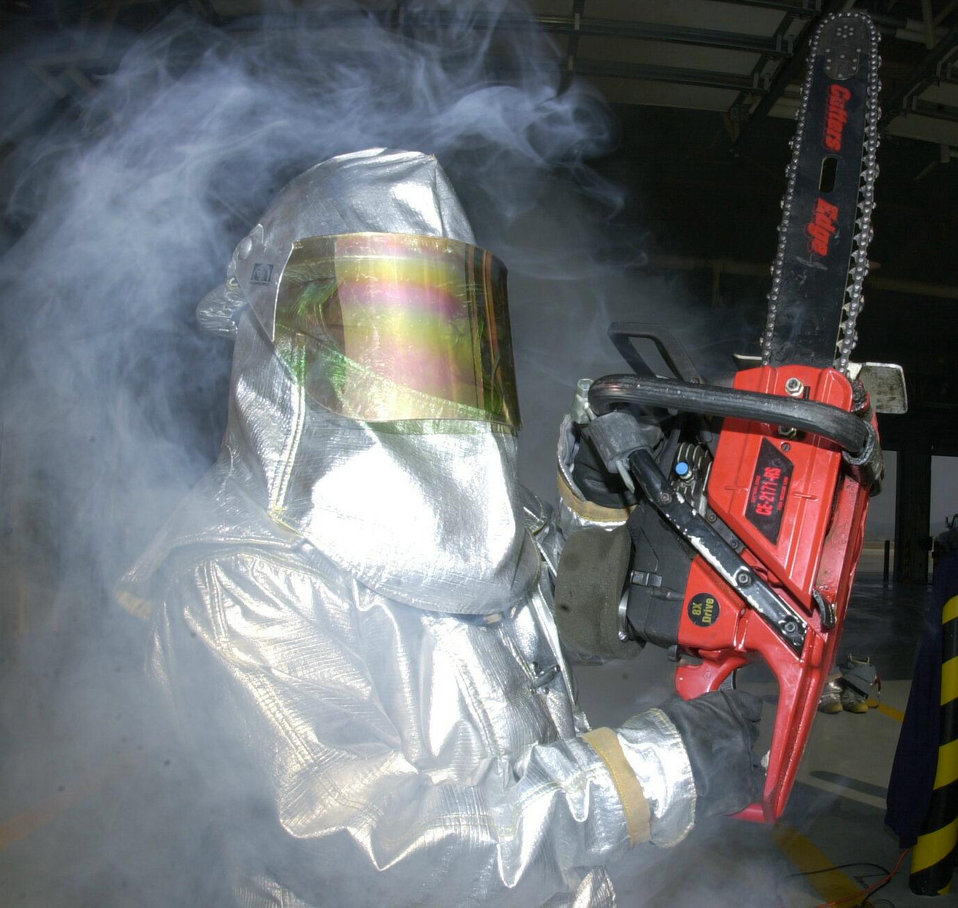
Exercise Beverley Bulldog

OSAN AIR BASE, South Korea -- Airman Jerry Vega handles a chainsaw during a fire fighting demonstration here recently. Airman Vega is assigned to the 51st Fighter Wing.